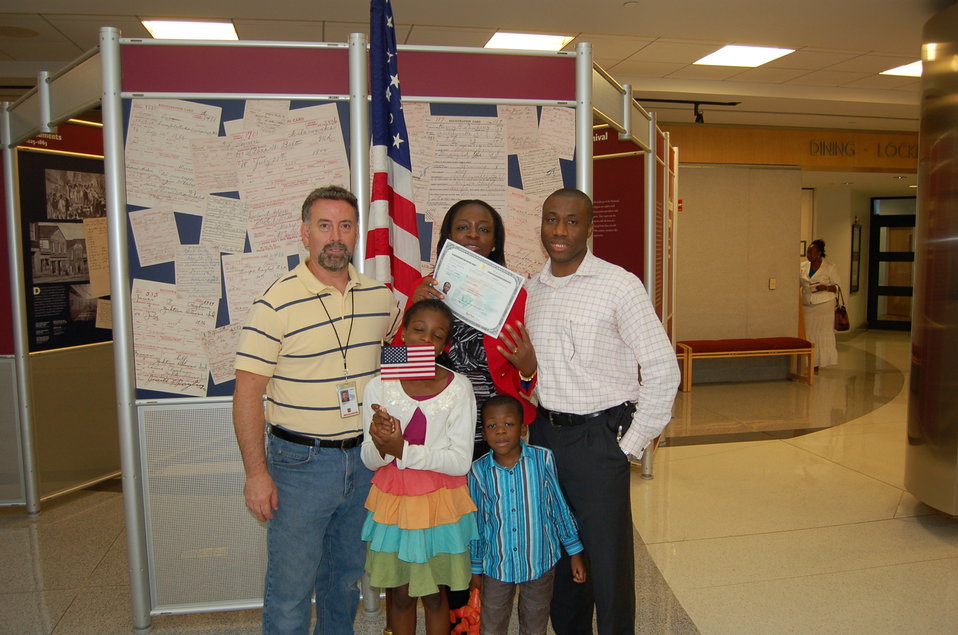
New Citizens